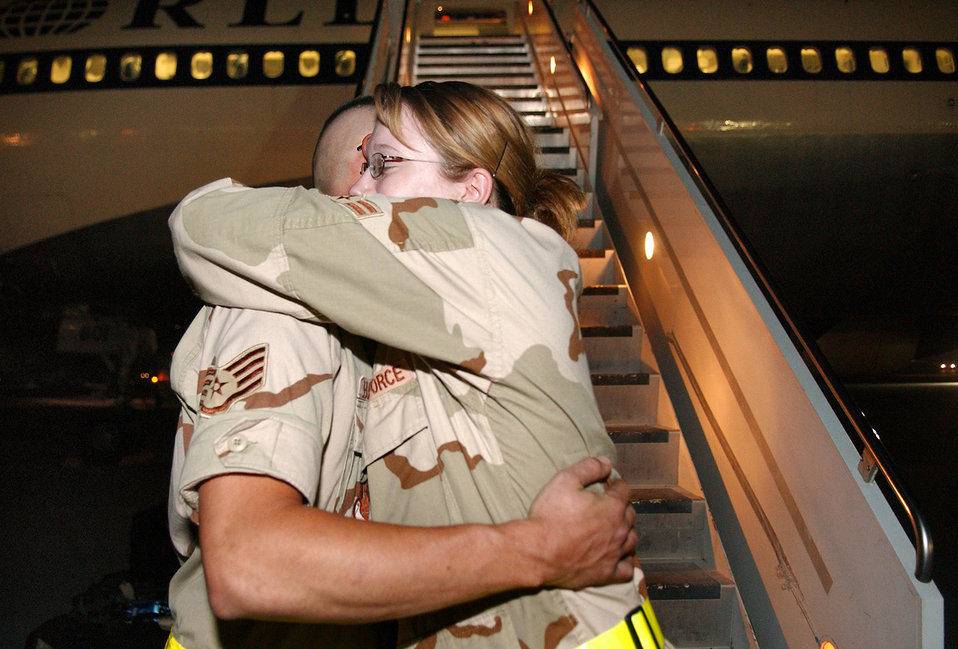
Sister, brother meet up in Southwest Asia

SOUTHWEST ASIA -- Airman 1st Class Theresa Hochstein gives her brother, Staff Sgt. Mathew Hochstein, a hug at a forward-deployed location before she boards a flight to Tallil Air Base, Iraq. They had not seen each other since December in their hometown of Harington, Neb. Airman Hochstein is a supply technician with the 407th Expeditionary Civil Engineer Squadron at Tallil and is deployed from Mountain Home Air Force Base, Idaho. Sergeant Hochstein is an aerospace ground equipment technician with the 379th Expeditionary Maintenance Squadron and is deployed from Offutt AFB, Neb.